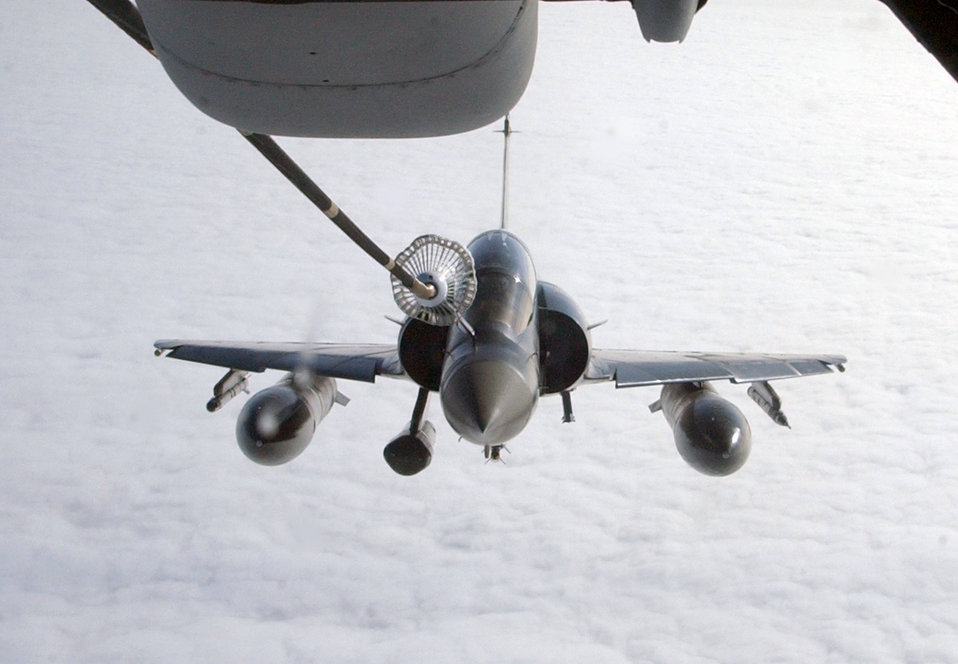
KC-10 Extenders keep jets on target

A French air force Mirage 2000 fighter jet receives fuel from a KC-10 Extender during Red Flag-Alaska 07-1 April 11. Fighter jets typically require aerial refueling to fight and stay in the fight longer. .